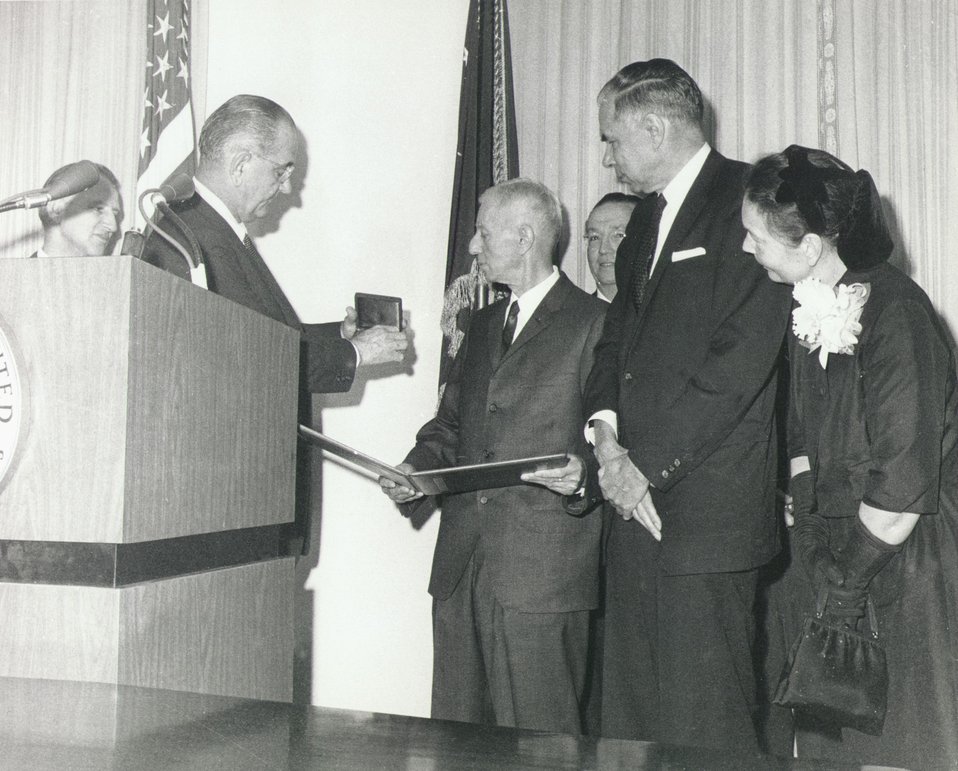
Fermi Award. Recipient: Rickover. Date: 1964.